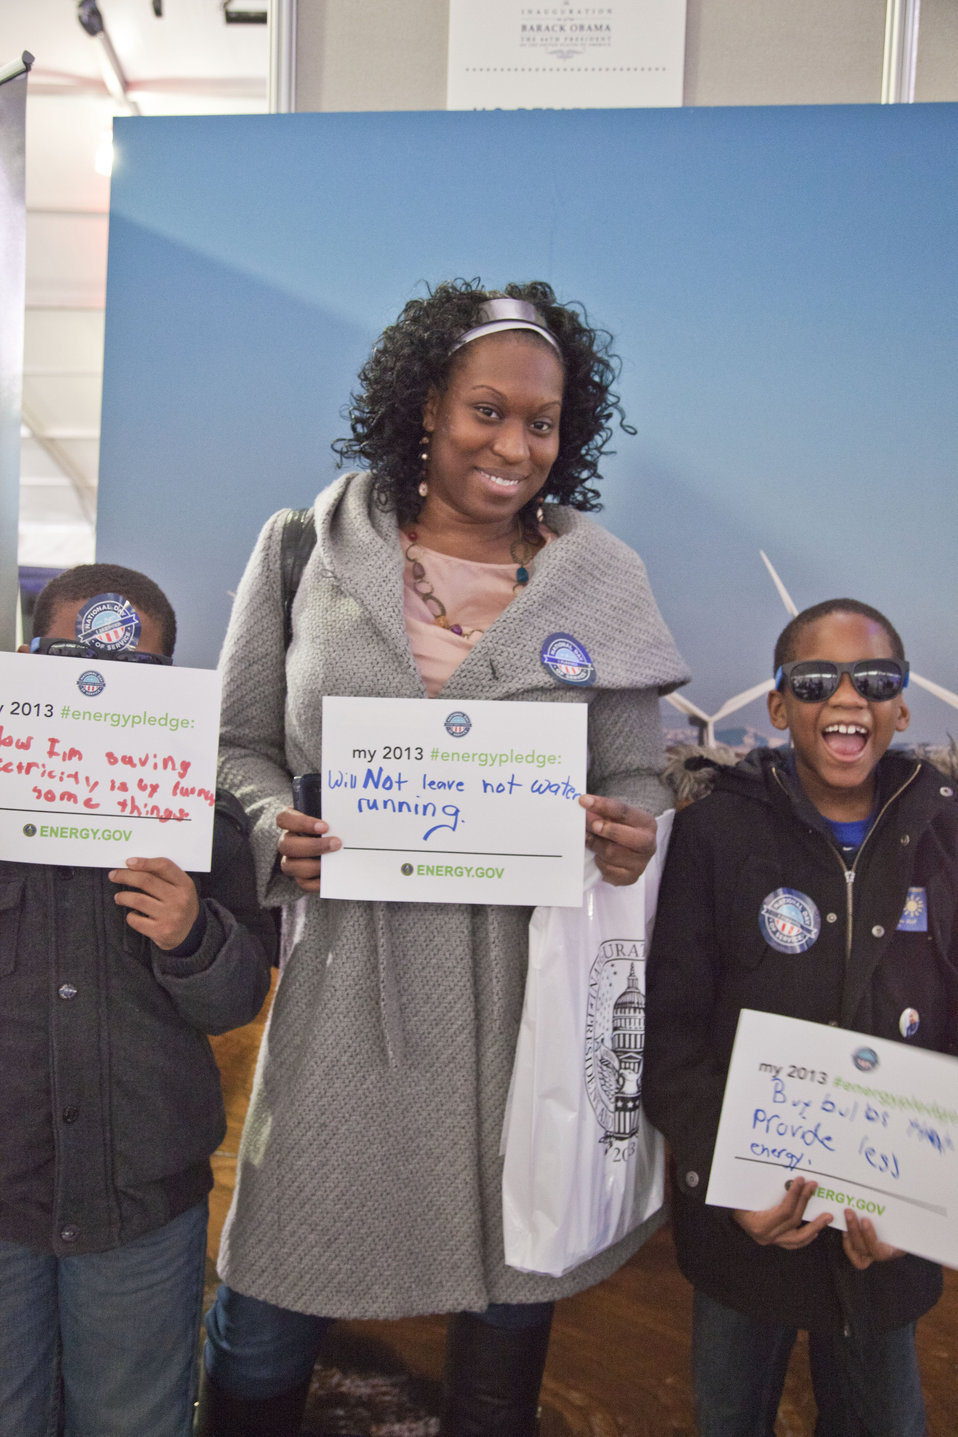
What's your #energypledge?